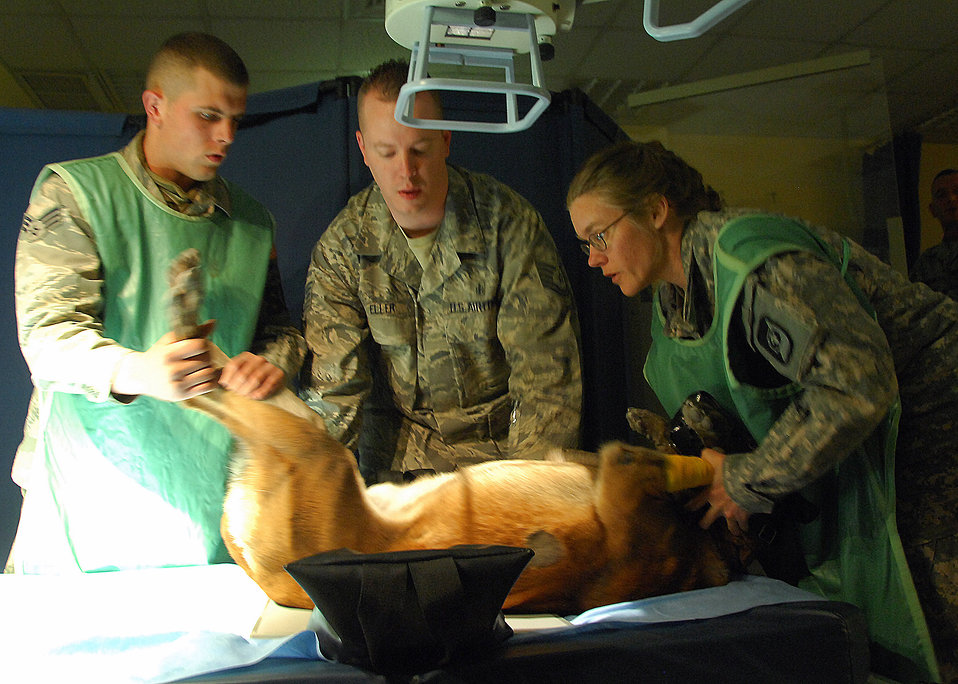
Healing touch

Senior Airman Daren Marshall (left to right), Tech. Sgt. Jeffrey Eller and Army Capt. Elizabeth Williams help align military working dog Zack on a table before receiving a chest X-ray Dec. 13 at an air base in Southwest Asia. Zack received an X-ray to see how his pneumonia has cleared since his last visit. Captain Williams is a 218th Medical Detachment Veterinarian. Sergeant Eller is an X-ray technician assigned to the 386th Expeditionary Medical Group and is deployed from Wright-Patterson Air Force Base, Ohio. Airman Marshall is a military dog handler assigned to the 386th Expeditionary Security Forces Squadron and is deployed from F.E. Warren AFB, Wyo.